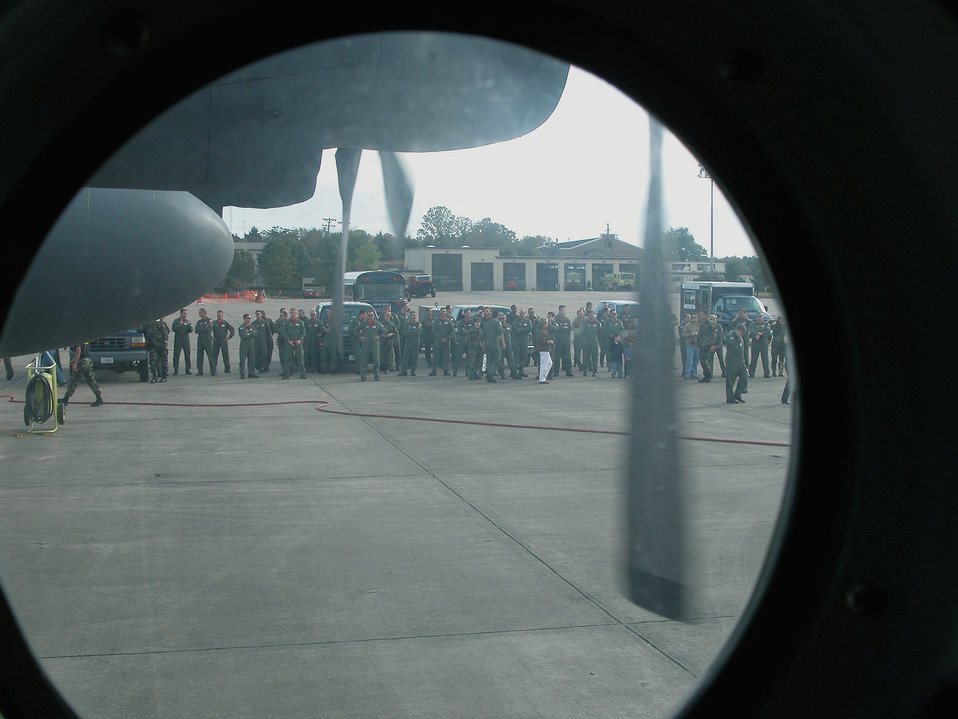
Fini-flight

LITTLE ROCK AIR FORCE BASE, Ark. -- People wait Oct. 28 for Lt. Col. Larry Hill, a 154th Training Squadron pilot, to leave his C-130 Hercules for the final time in his 34-year career. The colonel and his twin daughters -- Capts. Elissa Granderson and Leslie Hill -- flew his final flight together.